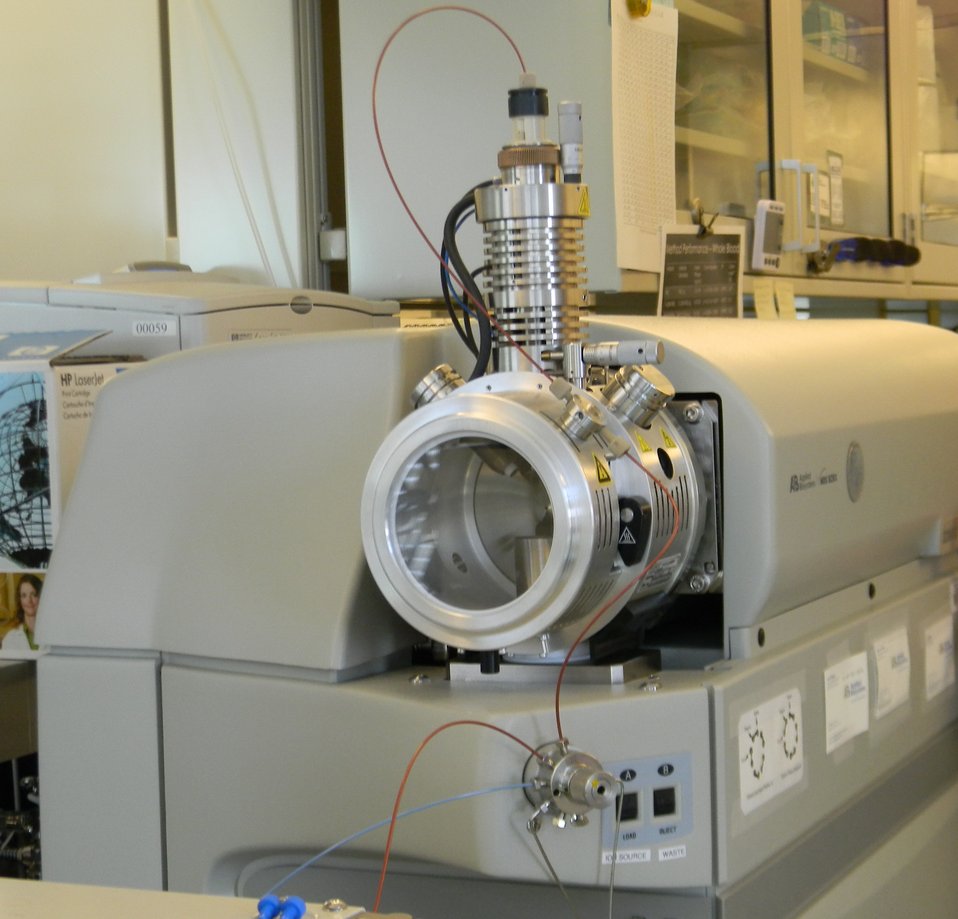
IRP equipment